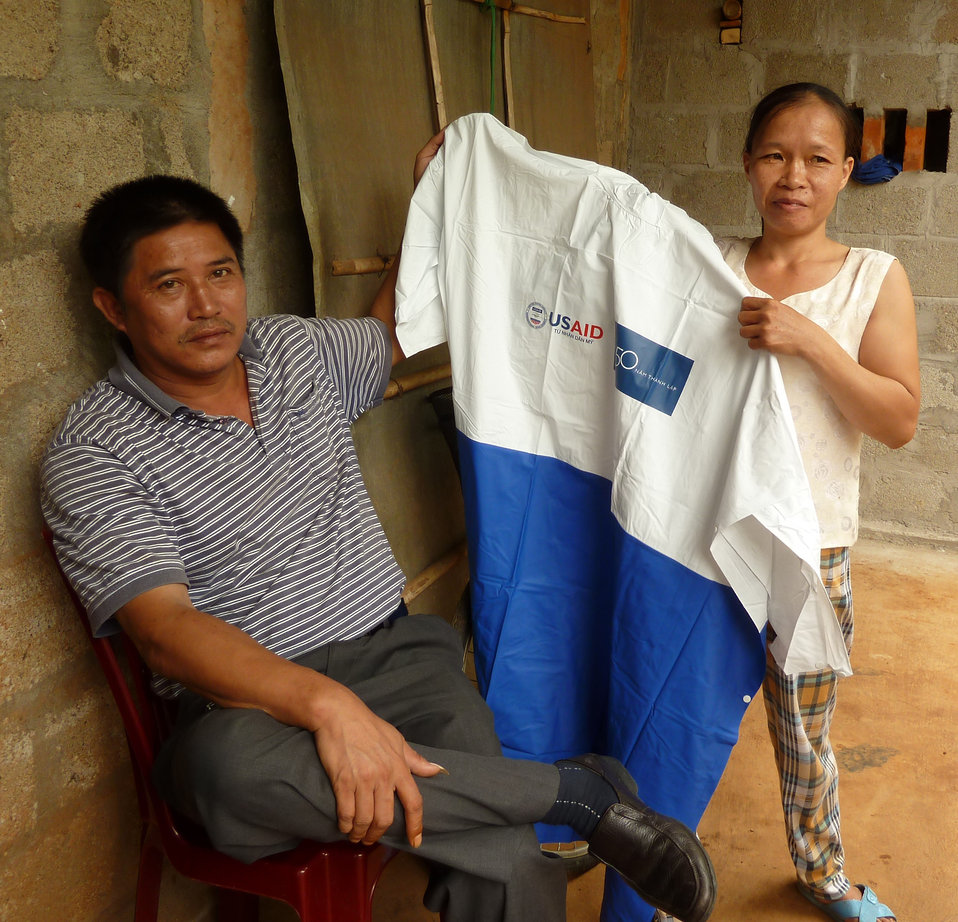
Animal health worker training in Quang Tri province